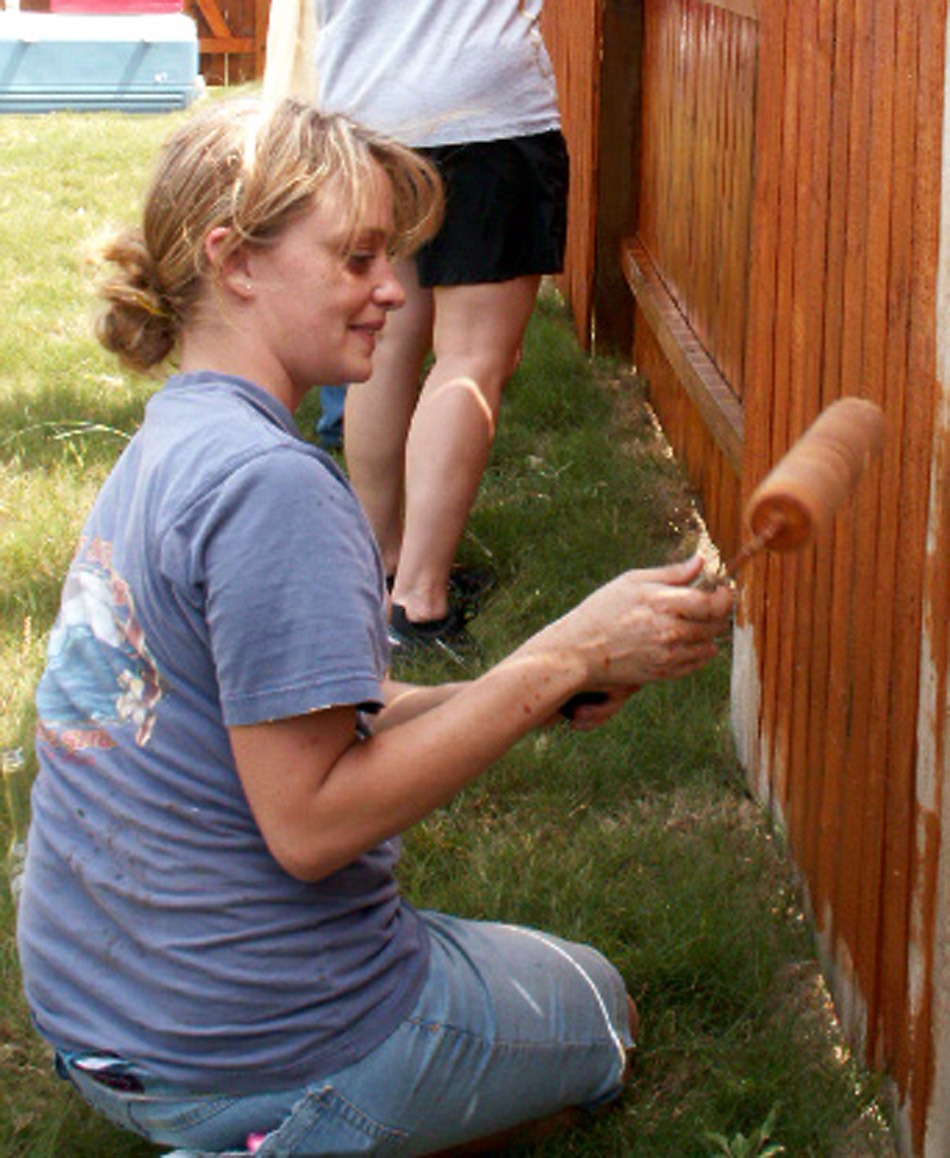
AFPC Airmen help wounded warrior improve quality of life

Staff Sgt. Sara Digennaro applies waterproofing to a fence as part of a volunteer effort supporting Operation Homefront April 30 in Cibolo, Texas. Volunteers from the Top 3 Association from Air Force Personnel Center from Randolph Air Force Base, Texas, helped craft a gate to provide better access between the front and back yards for Tech. Sgt. Israel Del Toro, an Airman recovering from wounds sustained during a roadside bombing in Afghanistan. Sergeant Digennaro is a personnelist at AFPC.